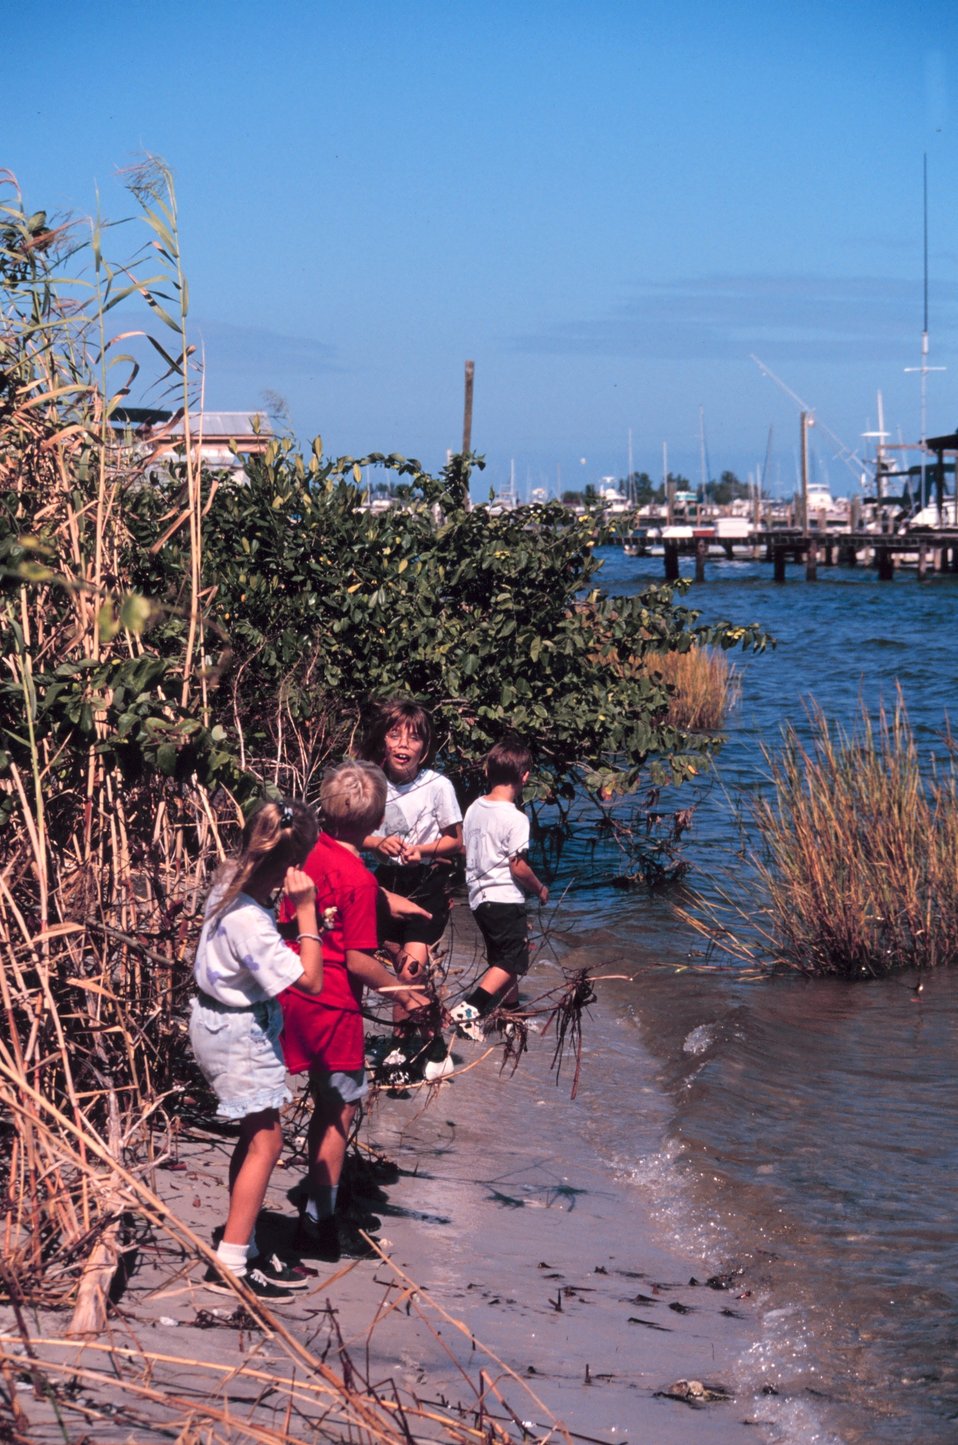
Volunteers collect mangrove propagules to replant after clearing Brazilian Peppers from mangrove habitats.